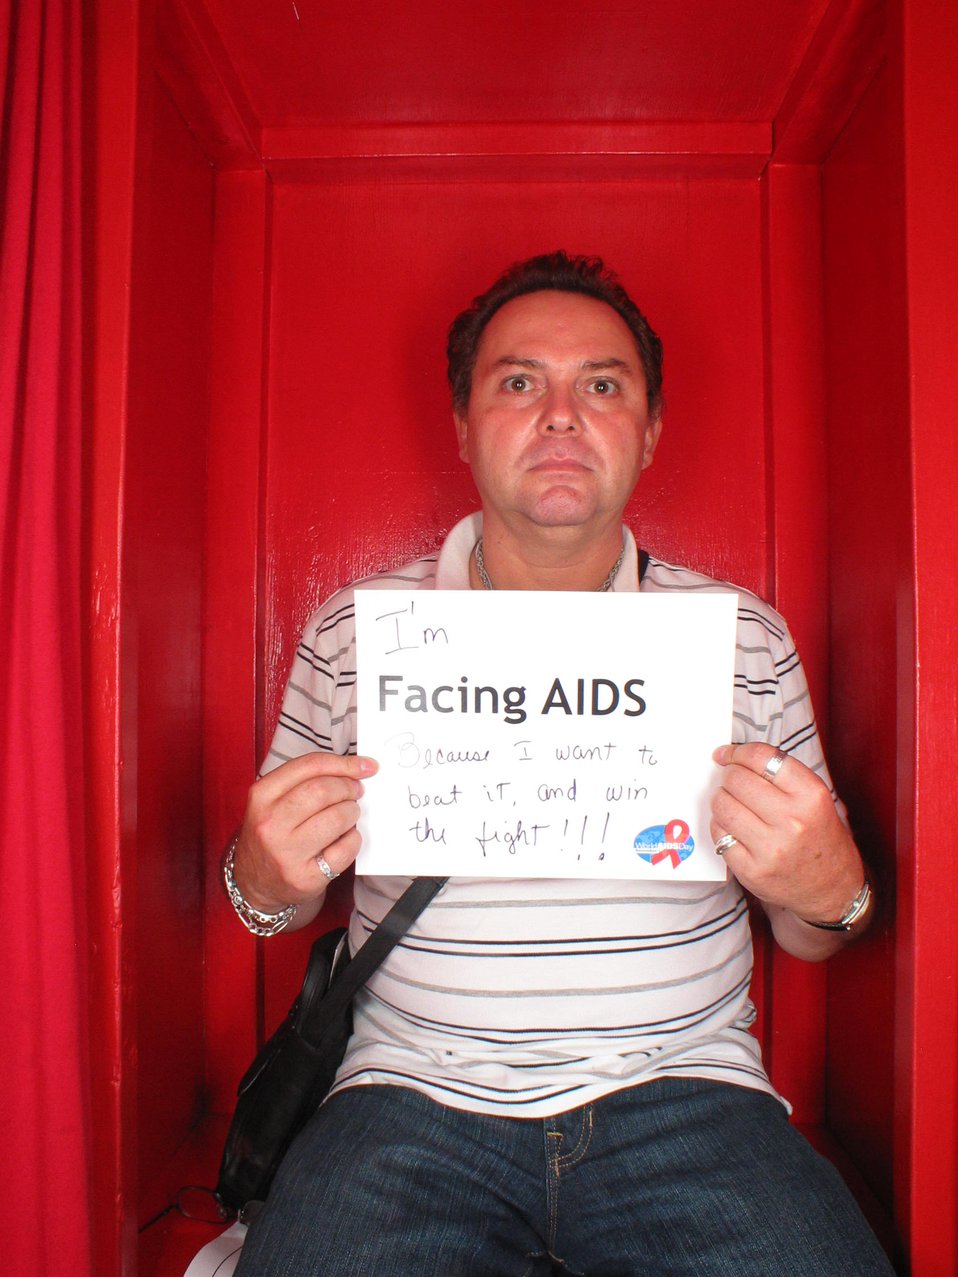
I'm Facing AIDS because I want to beat it and win the fight!!!